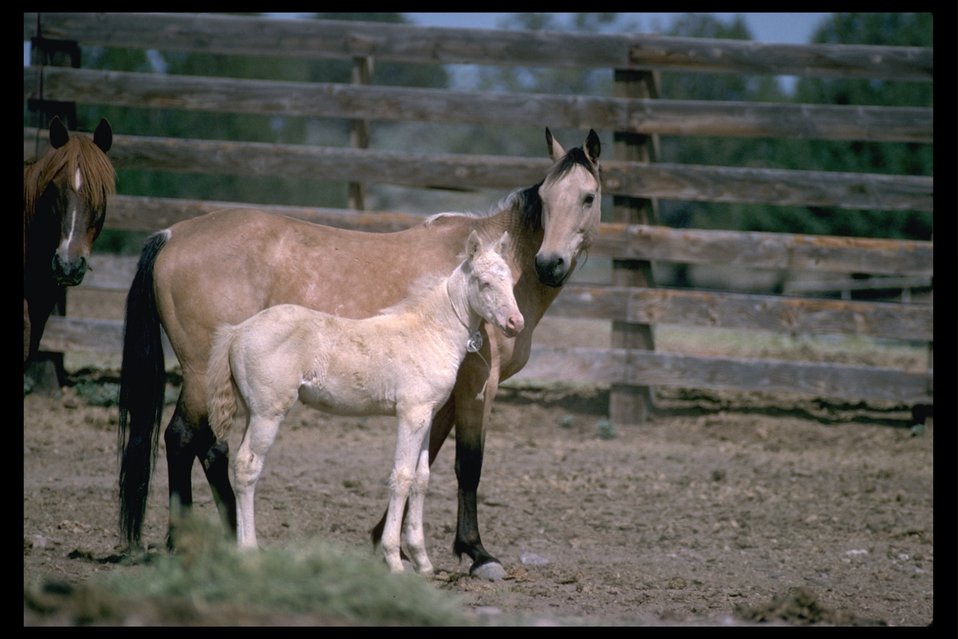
Mare/foal pair awaits adoption at the Burns Wild Horse Corrals.